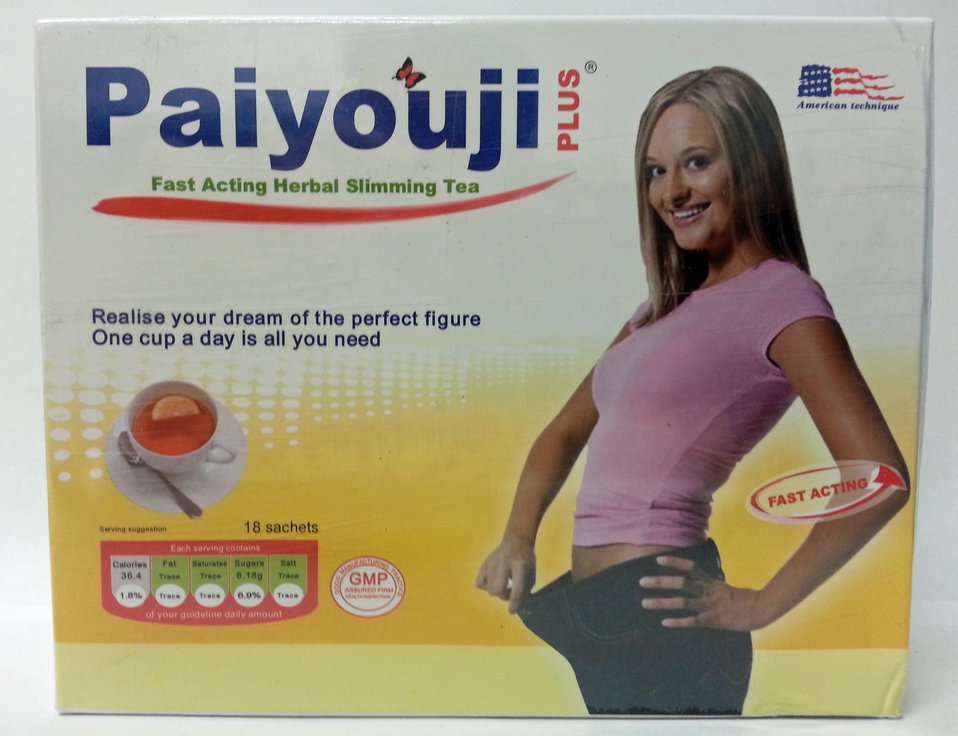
Paiyouji Plus

June 18, 2013 - June 27, 2013 - The FDA is advising consumers not to purchase or use 'Paiyouji Plus,' a product promoted and sold for weight loss. The product was found to contain undeclared sibutramine. For more information, go to www.fda.gov/Drugs/ResourcesForYou/Consumers/BuyingUsingMe...

And read this Consumer Update: Beware of Fraudulent ‘Dietary Supplements’